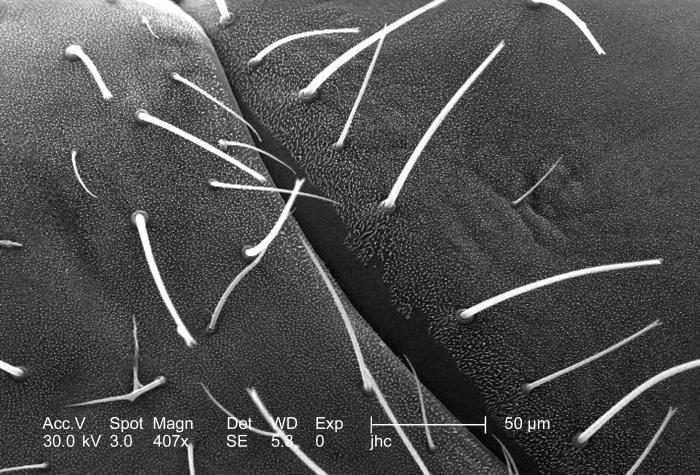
At an even lower magnification of 407x, of the same region as depicted in PHIL# 8938, this scanning electron micrograph (SEM) revealed the highly textured exoskeletal surface of an unidentified green bug, found deceased on the grounds in the suburbs of Decatur, Georgia, attached to a deceased, unidentified caterpillar. The exoskeleton on insects is commonly adorned by a myriad of protuberances, some of which are to allow its owner to attract a mate, others to detect changes in its environment, and still others to act as protective mechanisms by which the organism can thwart a foe, or avoid being eaten by a predator. At this low magnification, the insects sensorial "hairs", or "setae" are visible, which allow the organism to detect changes in environmental temperature, tactile stimuli, and chemical queues.